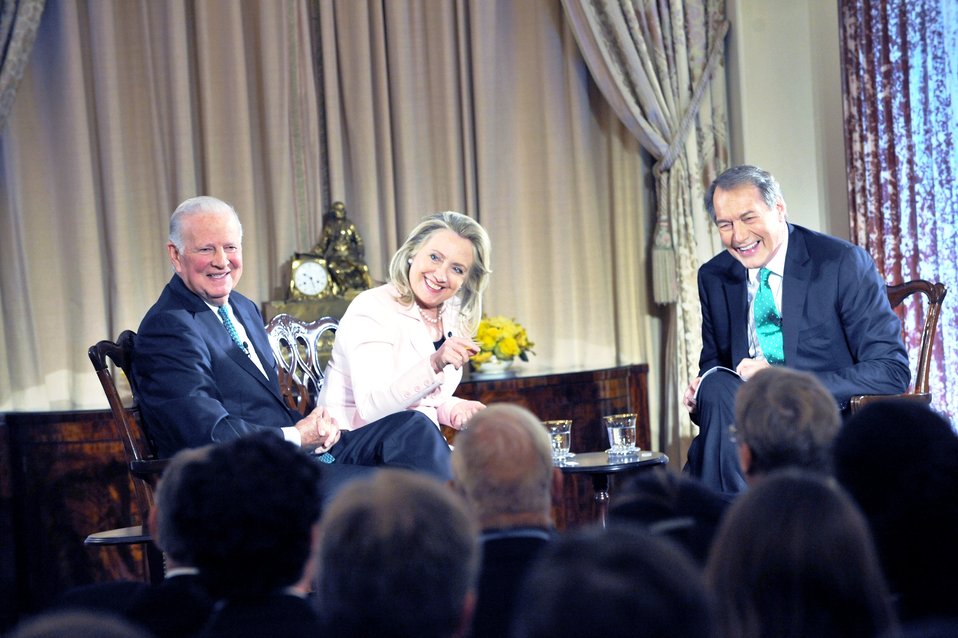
Secretary Clinton and Former Secretary Baker With Charlie Rose

U.S. Secretary of State Hillary Rodham Clinton and Former U.S. Secretary of State James A. Baker, III participate in a “Conversation on Diplomacy, Moderated by Charlie Rose” at the U.S. Department of State in Washington, D.C., on June 20, 2012.